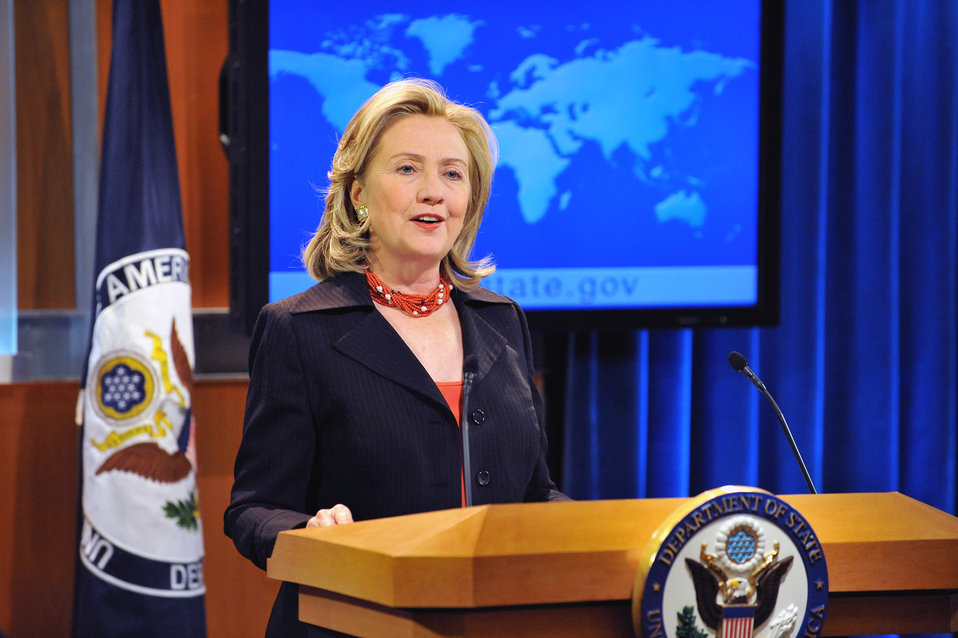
Secretary Clinton Releases the Annual Human Rights Report

U.S. Secretary of State Hillary Rodham Clinton releases the Country Reports on Human Rights Practices for 2010, at the U.S. Department of State in Washington, D.C., on April 8, 2011.